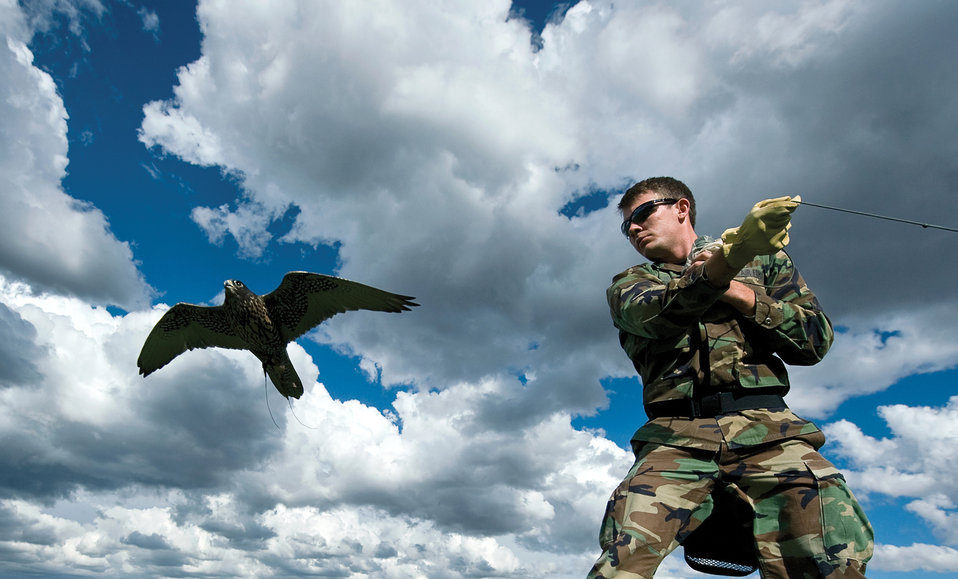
A falcon takes to the air

Air Force Academy Cadet 1st Class Jeremiah Baxter, the cadet-in-charge for the Academy falconry team, pulls the lure Sept. 10, ,2010, as Ace, a black gyr-saker falcon, makes a pass at it.